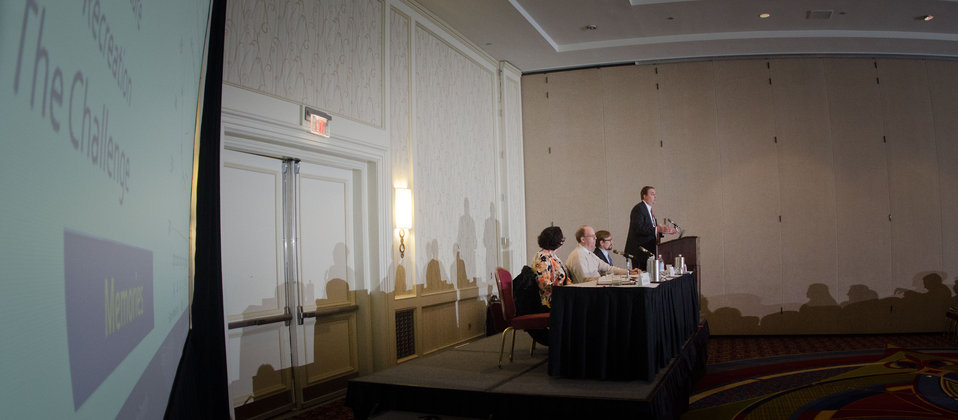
Federal Reserve Bank of Kansas, City Omaha Branch Executive Vice President Jason Henderson, responds to a question, during “The Farm Income Outlook for 2012” session of the Food Prices & Farm Income Track, at the 2012 Agricultural Outlook Forum, “Moving Agriculture Forward, Growing, Innovating and Celebrating 150 Years.” held at the Crystal Gateway Marriott Hotel, Arlington, Virginia, on Friday, February 24, 2012. The session focused on general measures of the financial well being of the farm economy, including USDA’s official outlook for farm income, the distribution of income across farm households, and the competitiveness of the rural economy.